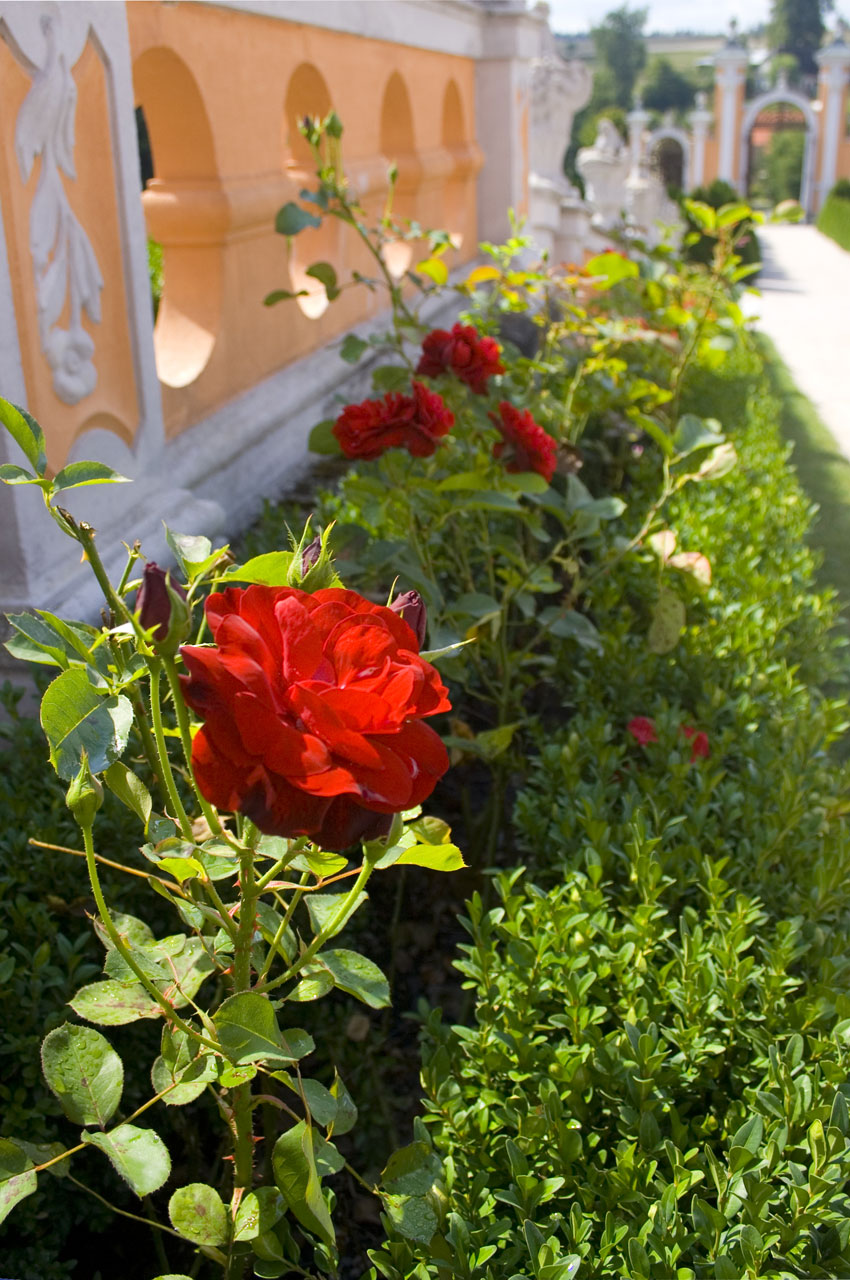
Red roses in castle gardens.